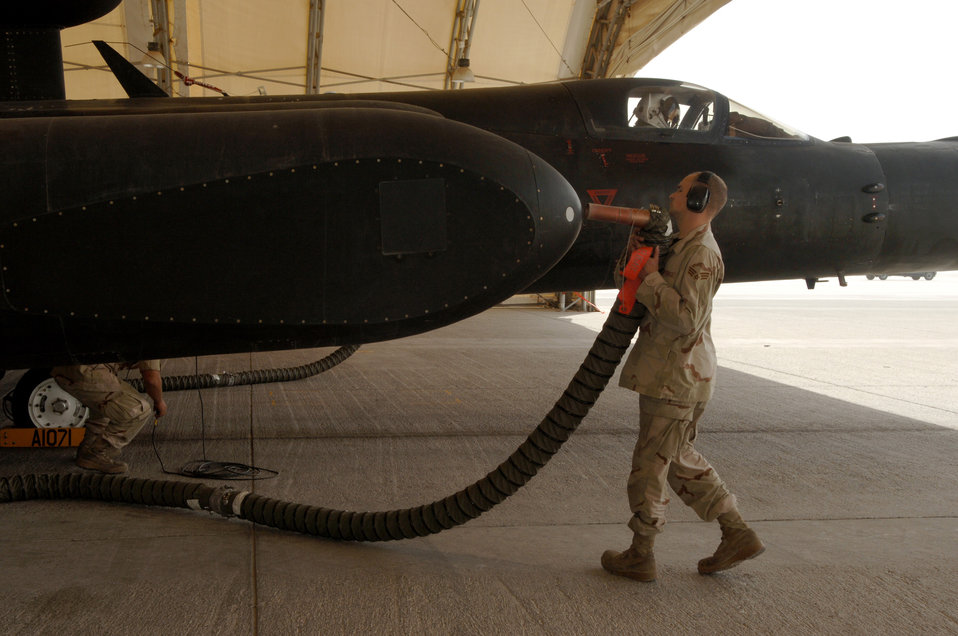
U-2 squadron continues to fly high

Senior Airman Jonathan Cantrell, a crew chief with the 99th Aircraft Maintenance Unit at an air base in Southwest Asia, removes the cooling tube from a U-2 Dragon Lady sensor pod Mar. 5 as the pilot prepares to take off for a mission. The 380th Air Expeditionary Wing hosts the only U-2 squadron in the area of responsibility, providing high-altitude intelligence, surveillance and reconnaissance for support in winning the war on terror.